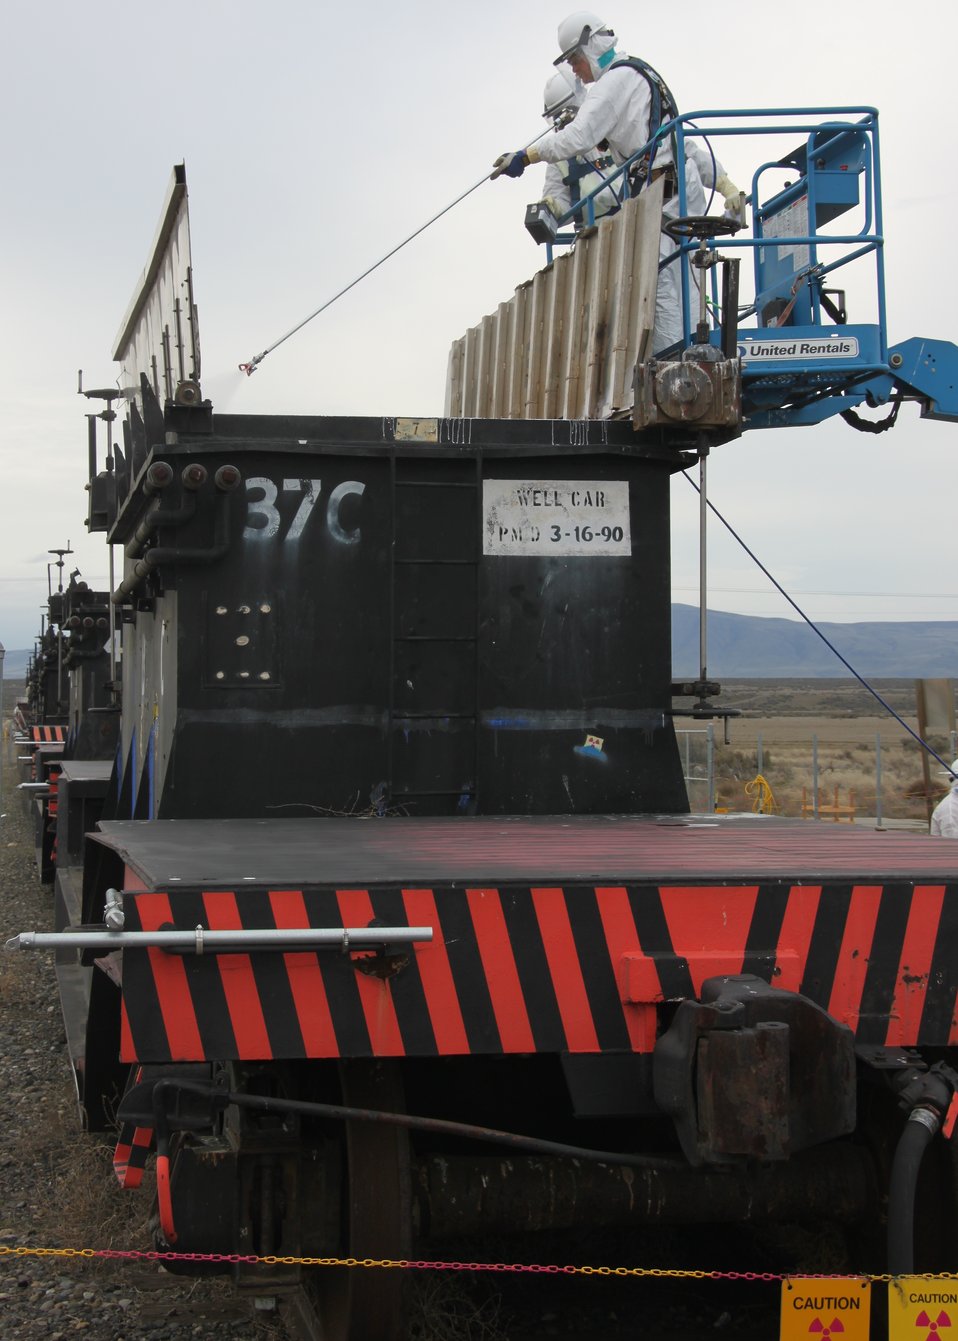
Recovery Act Funds Accelerate Cleanup, Reduce Footprint at Hanford Site

The Recovery Act has left its mark throughout the 586-square-mile Hanford Site, building a skilled workforce and accelerating the removal of contaminated waste and buildings left behind from decades of plutonium production.